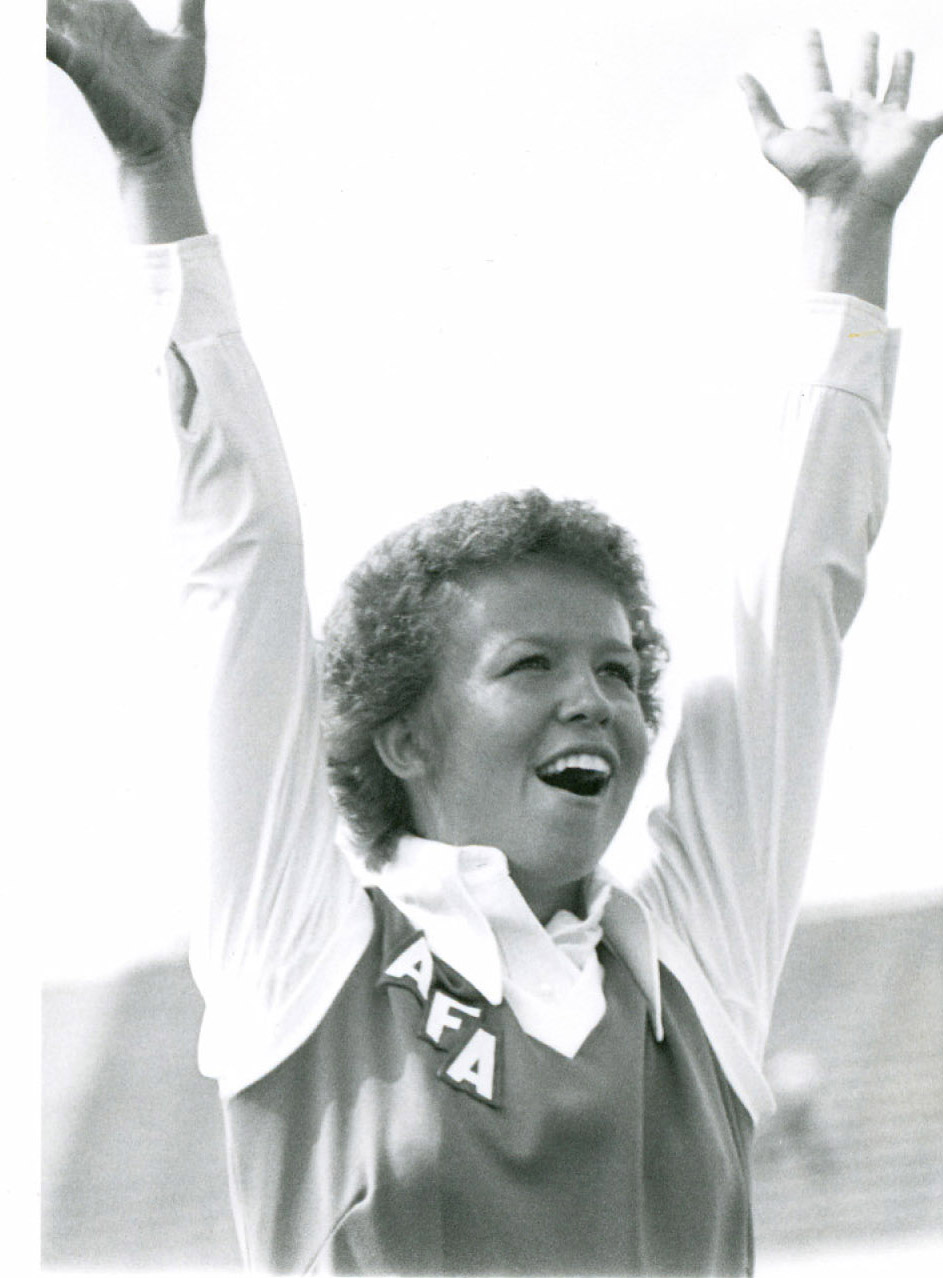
A woman of many firsts

Brig. Gen. Allison Hickey, then Cadet 4th Class Allison Hilsman, was a member of the U.S. Air Force Academy cheer squad in 1976.